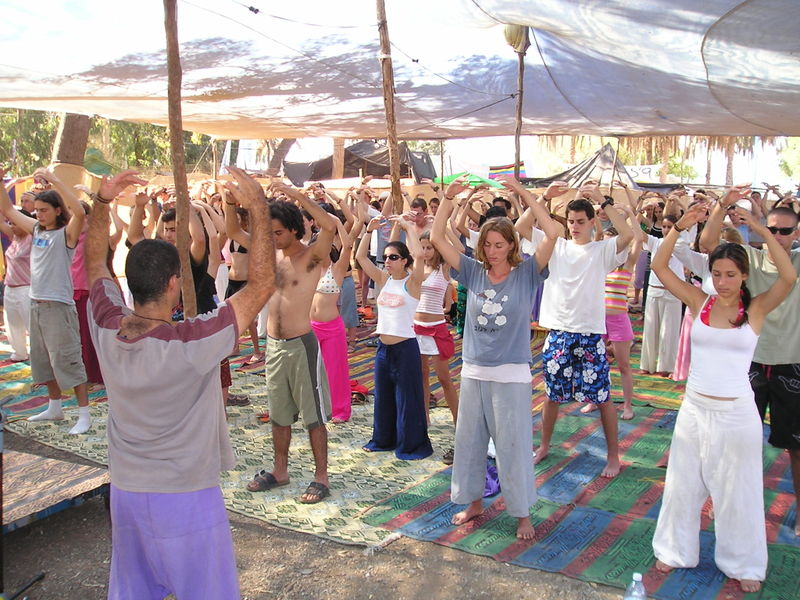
אימון he:פאלון דאפא בפסטיבל בראשית. נתרם על-ידי הצלמת תקווה לשימוש כל החפץ.